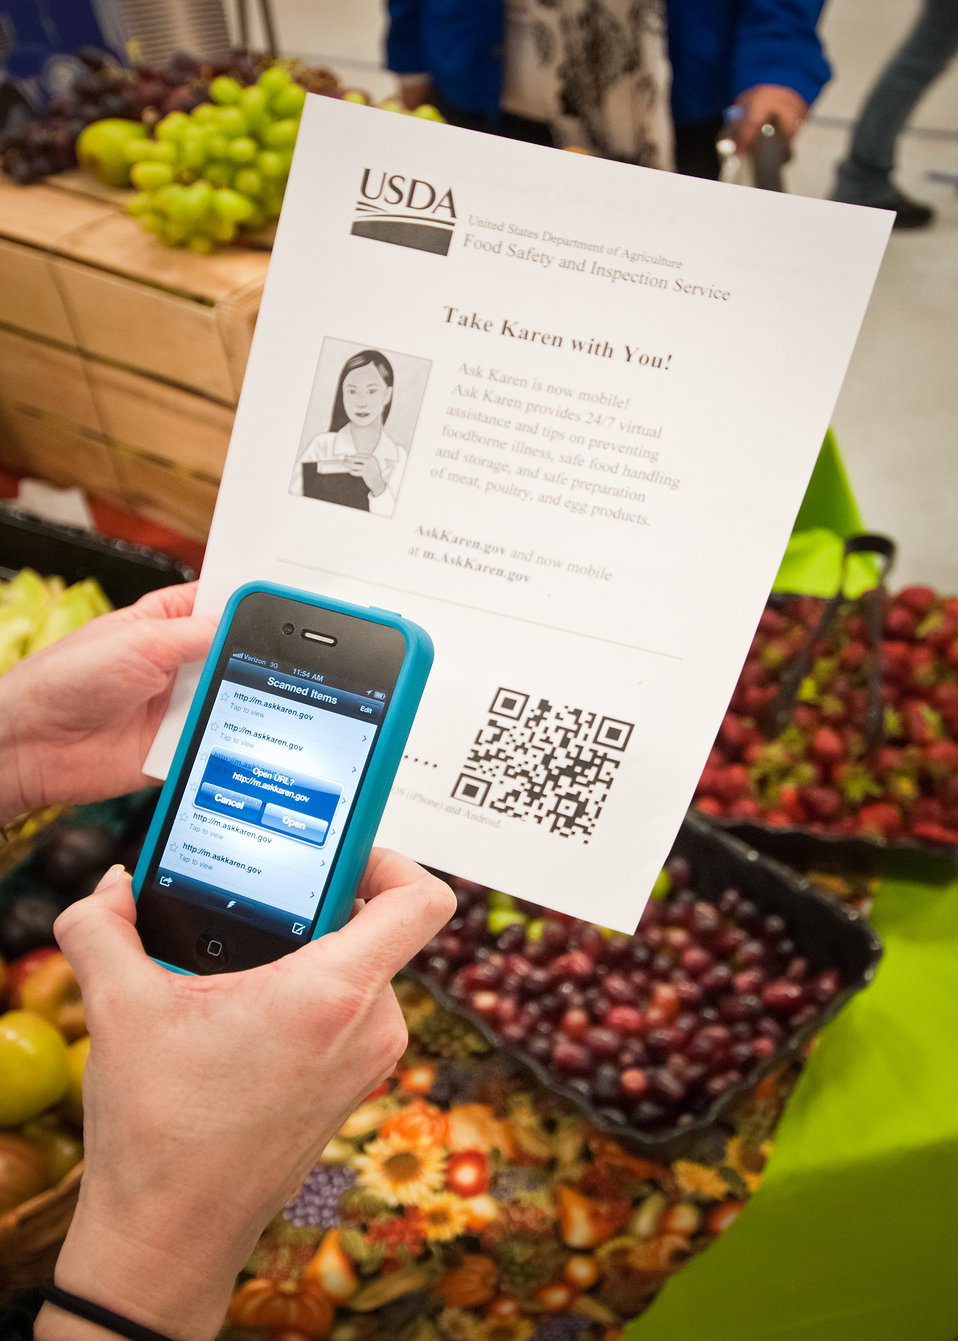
“Ask Karen,” an online food safety question and answer service provided by the United States Department of Agriculture, Food Safety Inspection Service is now mobile. “Ask Karen” provides 24/7 virtual assistance and tips on preventing food borne illness, safe food handling, storage and safe preparation of meat, poultry and egg products. The 'Ask Karen' app was announced at the United States Department of Agriculture, Food Safety Inspection Service, Food Safety Education Camp held at Maryland City Elementary in Laurel, MD, Thursday, May 5, 2011.